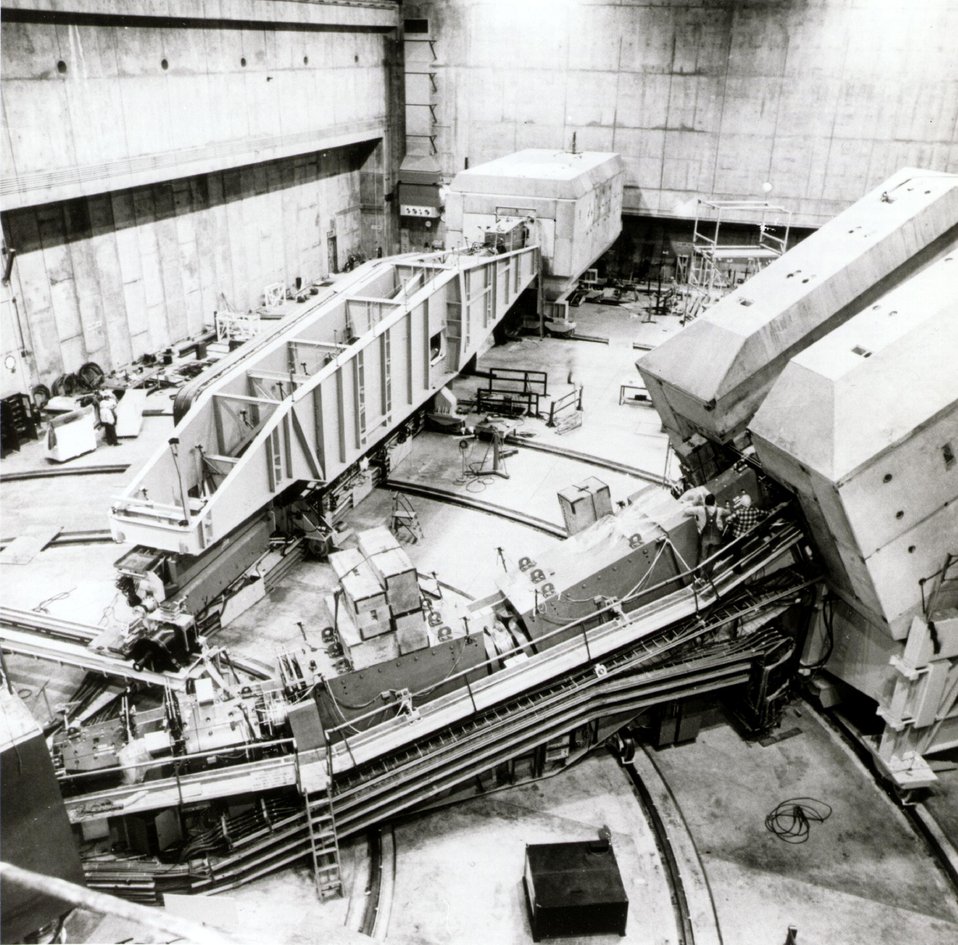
Photo shows the 8 and 20 Bev./c. spectrometers at the Stanford Linear Accelerator Center (SLAC). Circa 1968.